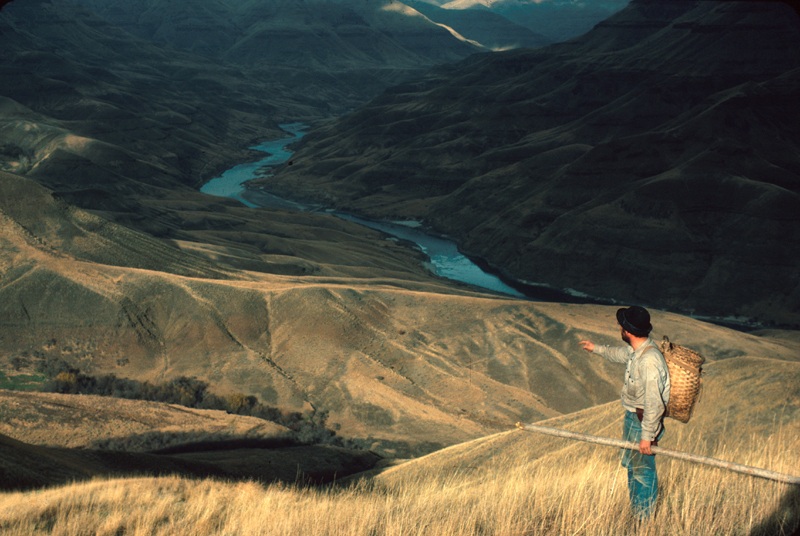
Lower Salmon River Cottonwood Field Office UCSC Upper Columbia Salmon Clearwater District